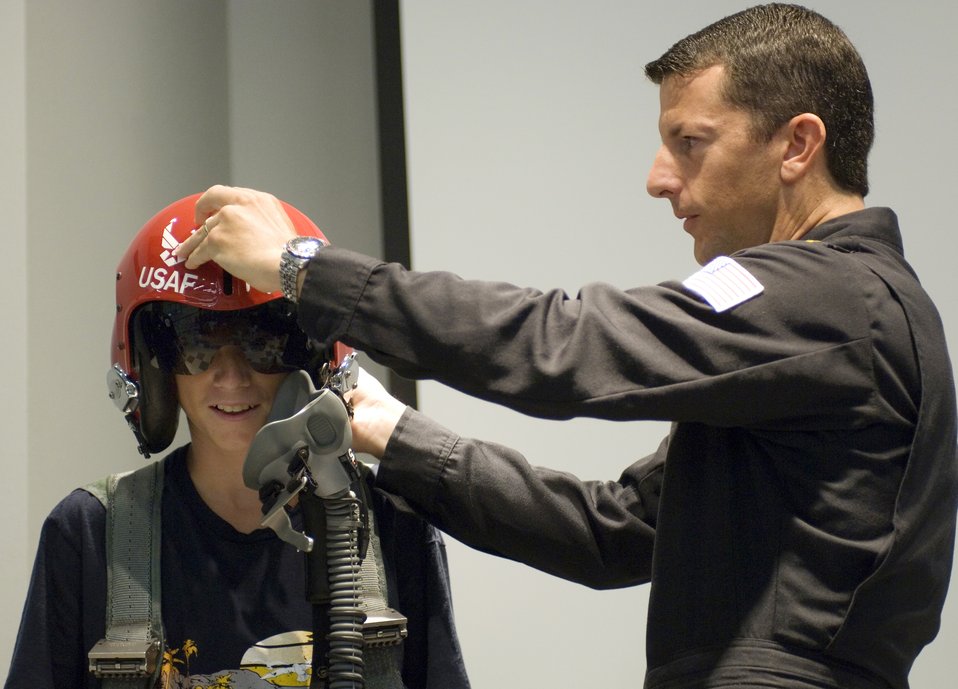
Thunderbirds visit youth camp

Maj. Brian Farrar of the Thunderbirds, the U.S. Air Force Air Demonstration Squadron, lowers the helmet visor for Colton Ceotto, who is attending a summer camp at Caty Cavins Community Center in O'Fallon, Ill., on Aug. 11. Major Farrar is Thunderbird No. 5 and lead solo for this year's team. The camp visit was part of Air Force Week community activities in the St. Louis area.